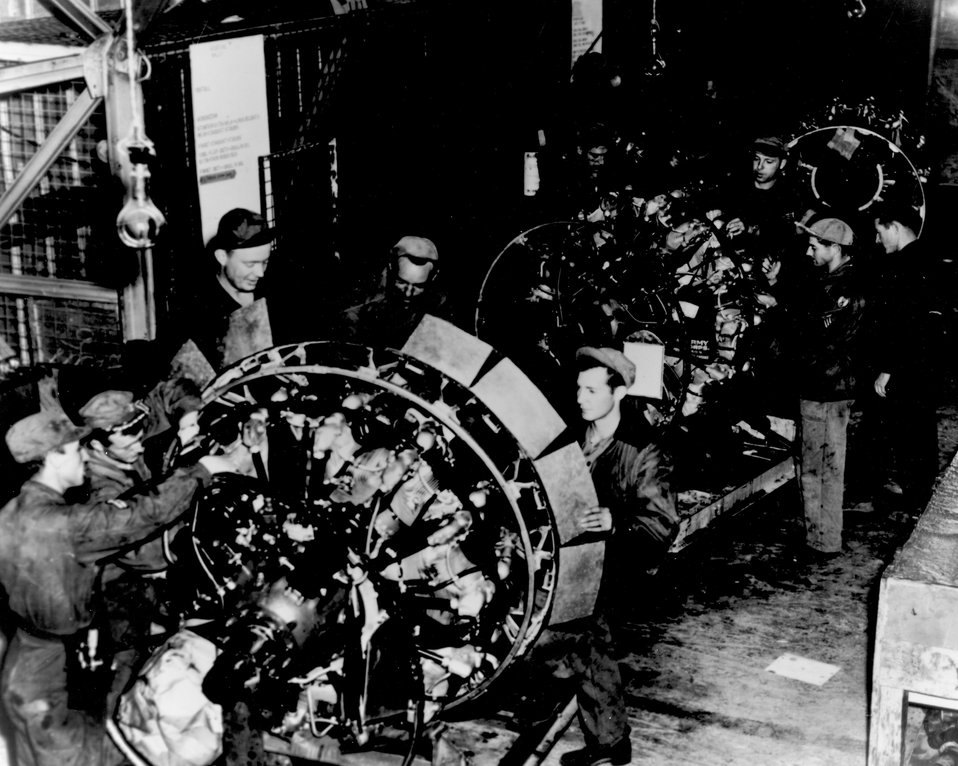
Senate recognizes Berlin Airlift anniversary

Workers service an engine on the engine buildup line at Rhein Main Air Base, Germany in 1948. Here the engines used on C-54 Skymasters flying the airlift to Berlin were disassembled, checked, worn parts replaced, reassembled and returned to service on the aircraft.